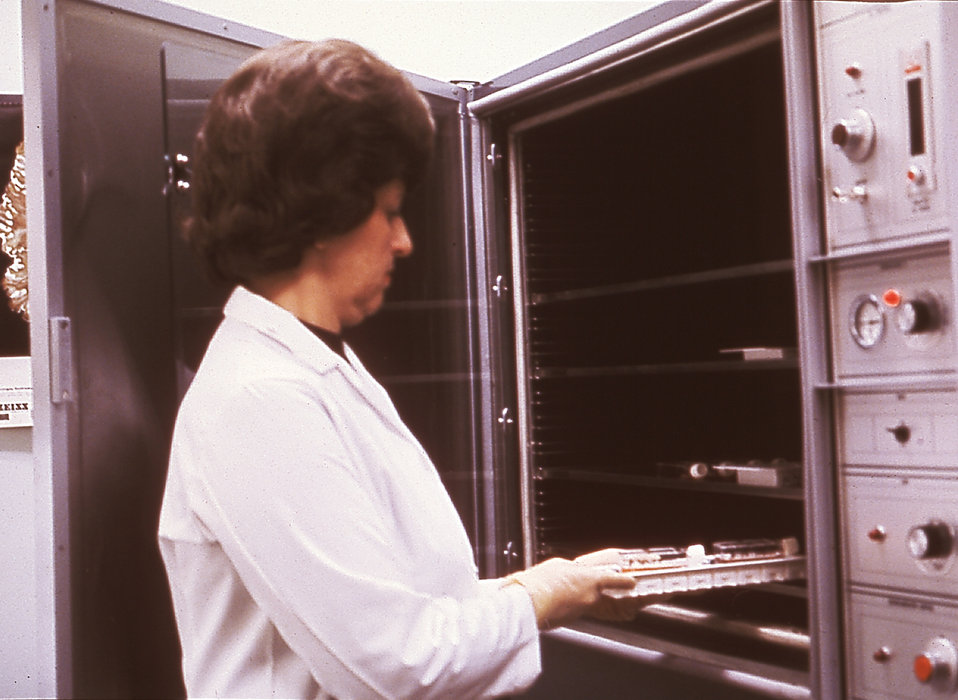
This laboratorian is shown placing an amniotic fluid cell culture into a CO2 incubator.